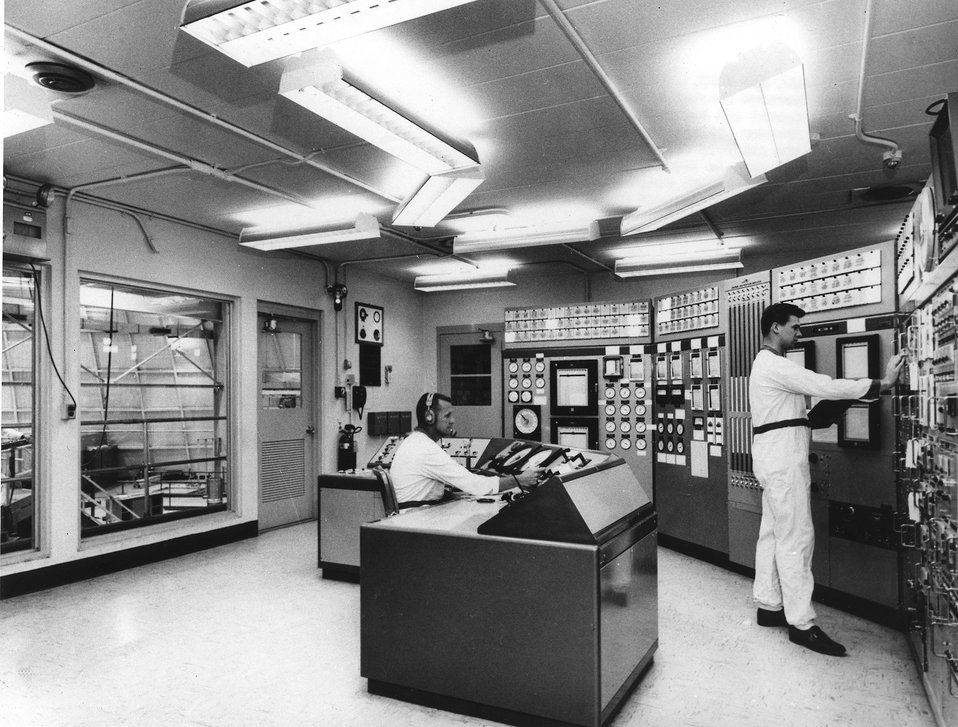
Scene at the High Flux Beam Research Reactor in September 1965 showing equipment and instrumentation being tested by Reactor Division Personnel. c. 1965